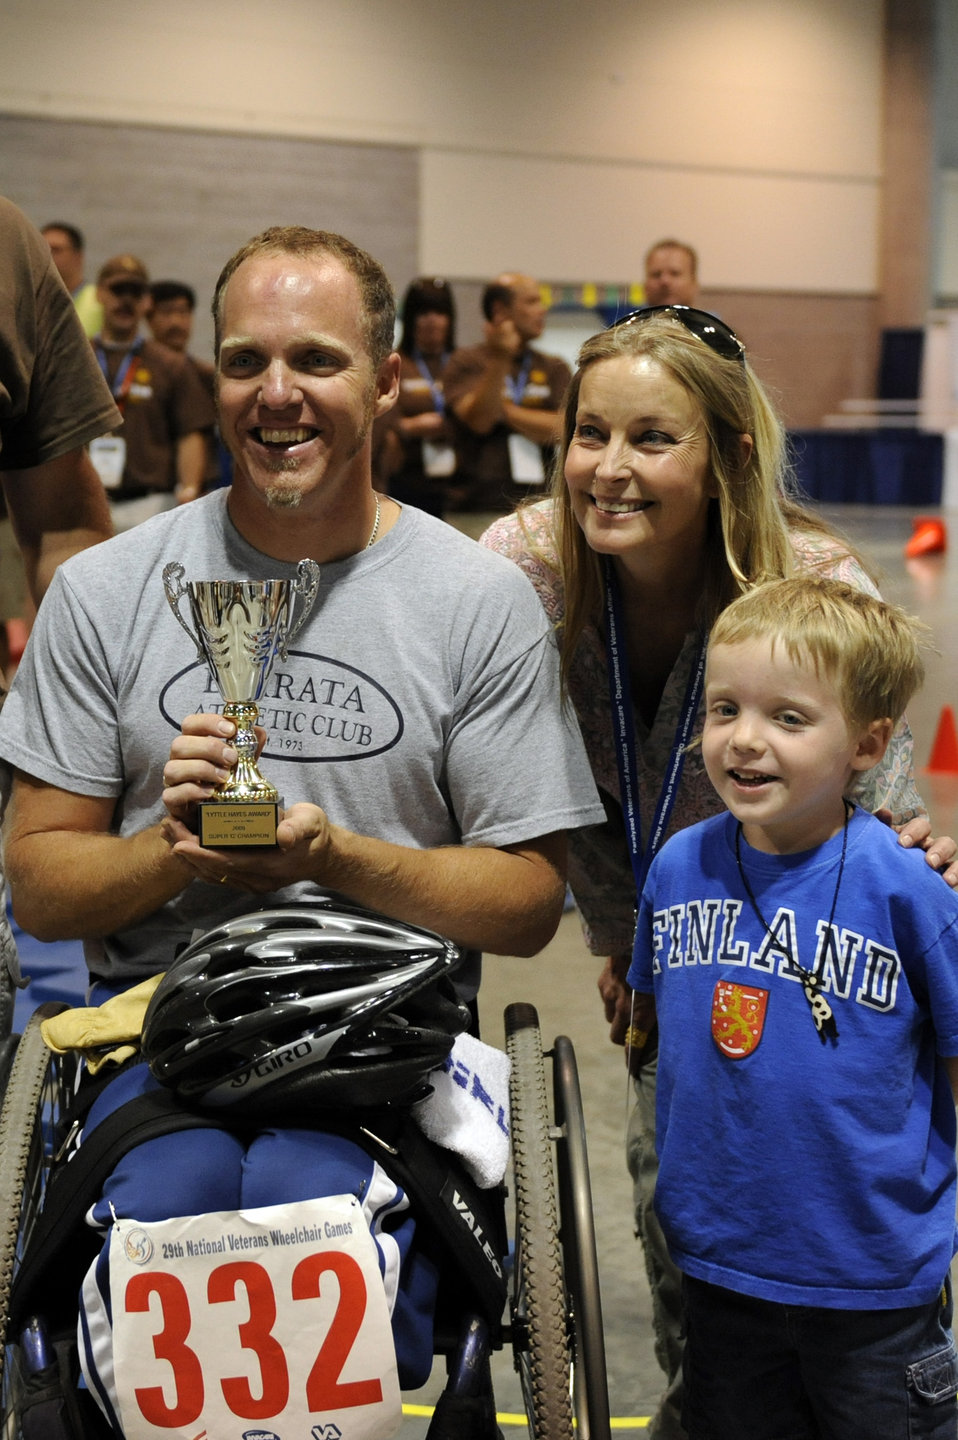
Volunteers ensure success at Veterans Wheelchair Games

Sean Halsted smiles for the cameras with his son, Ethan, 5, and Bo Derek after winning first place in the slalom super G competition during the 29th National Veterans Wheelchair Games July 16 in Spokane, Wash. Mr. Halsted is an Air Force veteran and resides in Rathdrum, Idaho. Bo Derek is an actress.